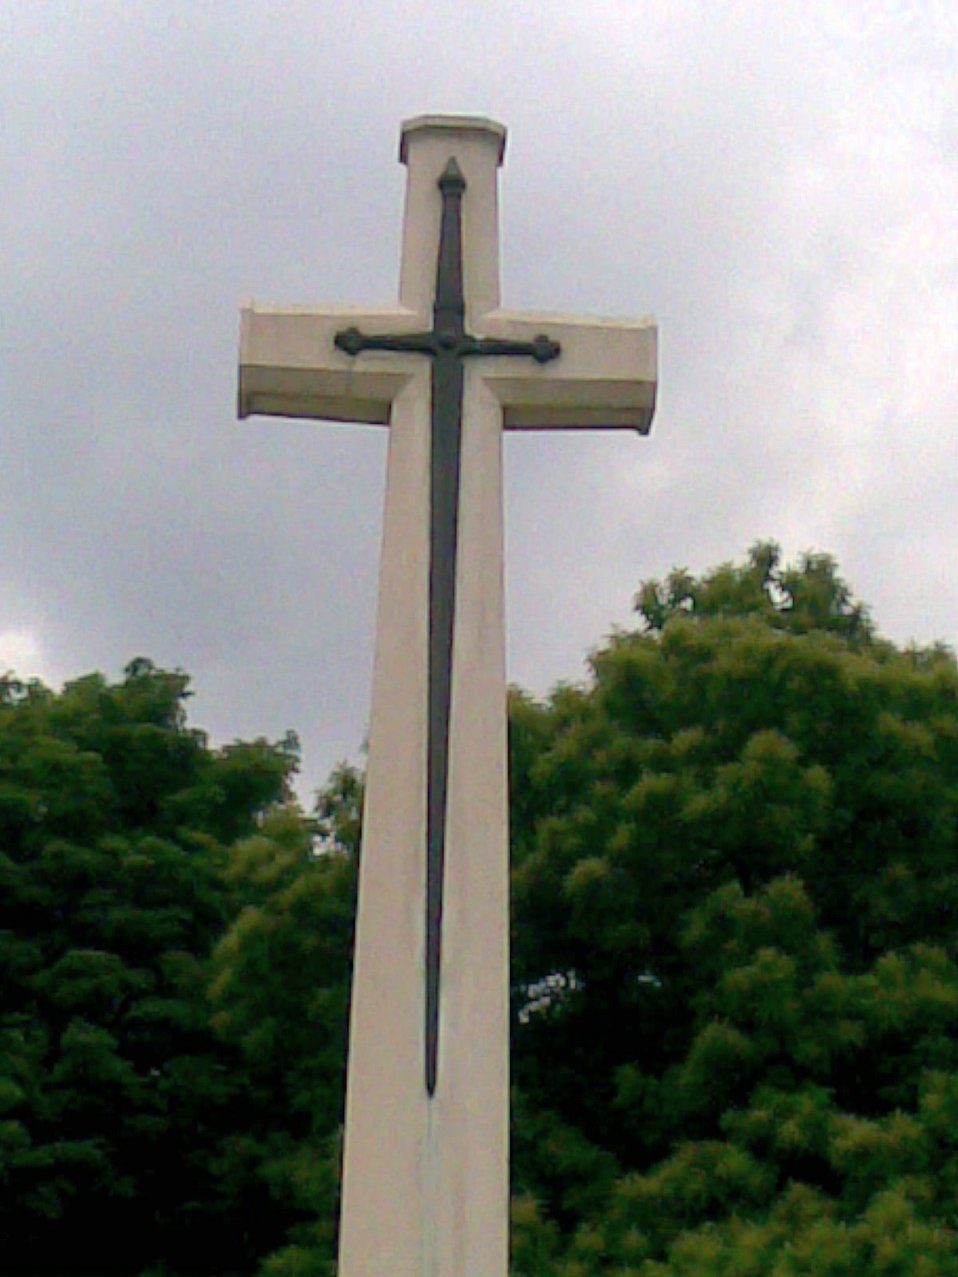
Deutsch: Rheinberg War Cemeterey St.-Patrick-Kreuz mit Kreuzritter-Schwert